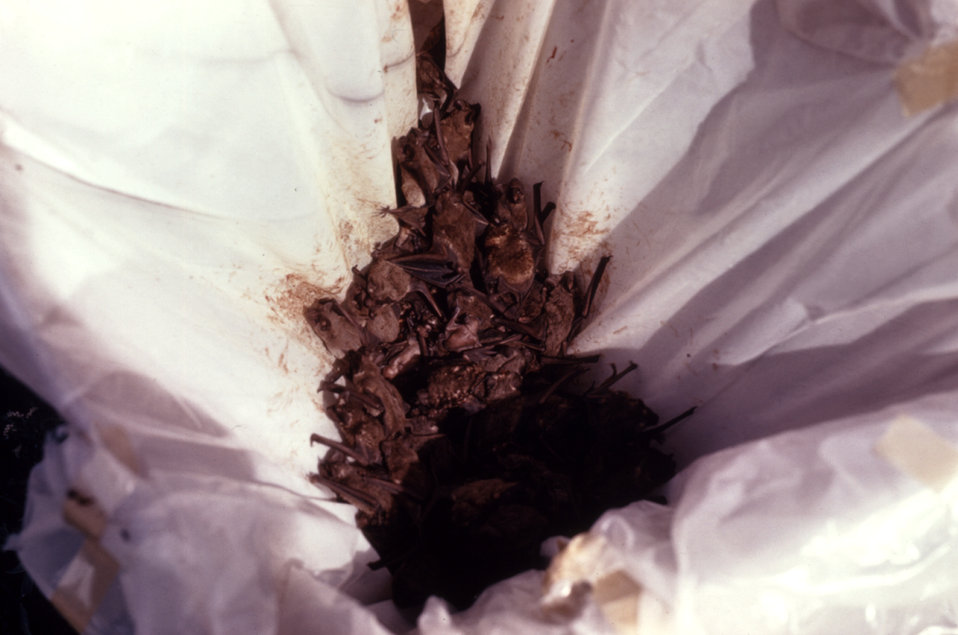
Here numerous bats have been collected within a box, and will later be part of an arbovirus study.